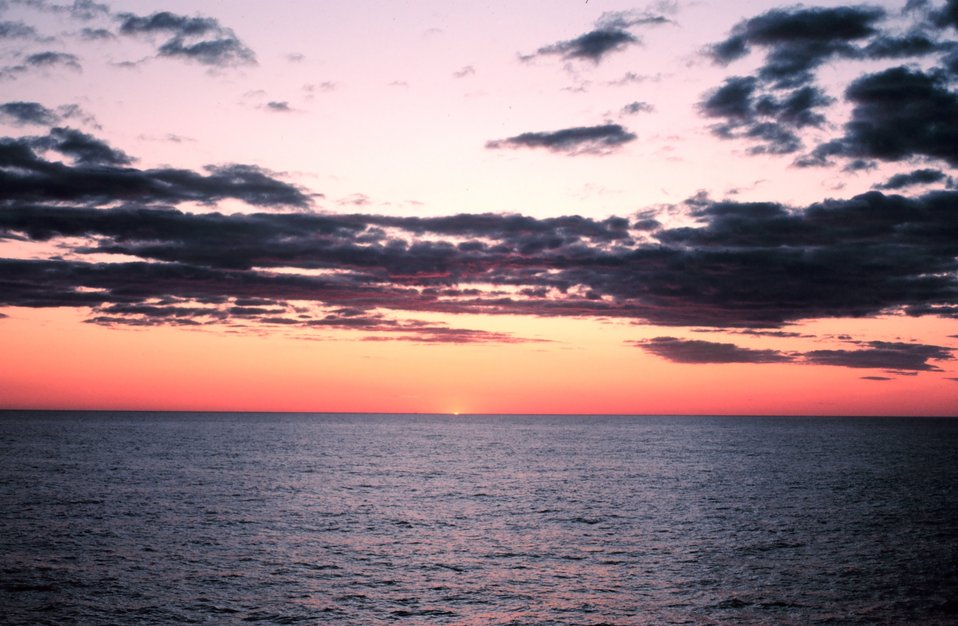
The last of the upper limb of the sun just before diving below the horizon.